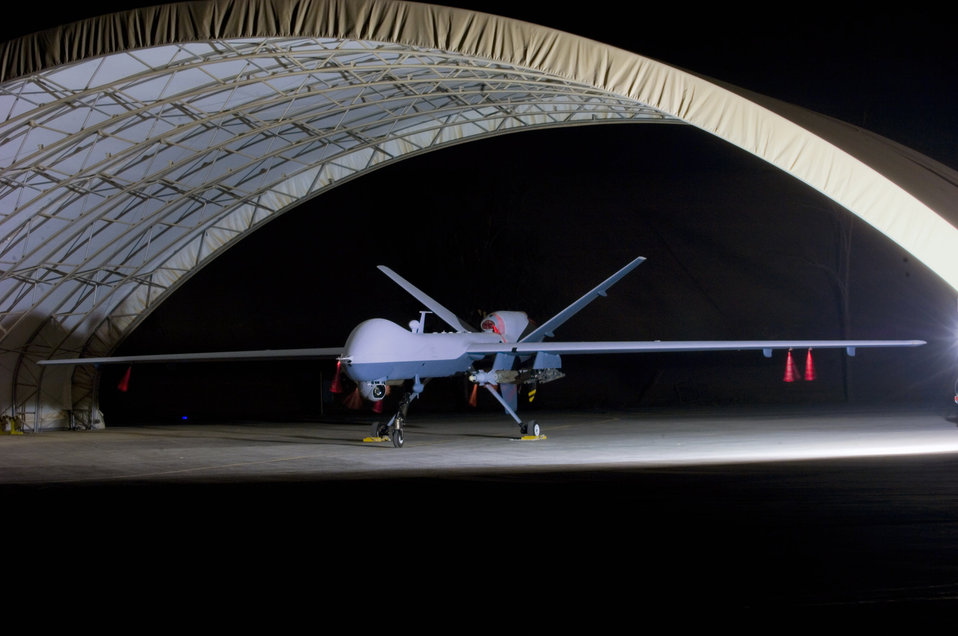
Light, but lethal

An armed MQ-9 Reaper unmanned aircraft sits in a shelter Oct. 15 at Joint Base Balad, Iraq, before a mission. Larger and more powerful than the MQ-1 Predator, the Reaper can carry up to 3,750 pounds of laser-guided bombs and Hellfire missiles.